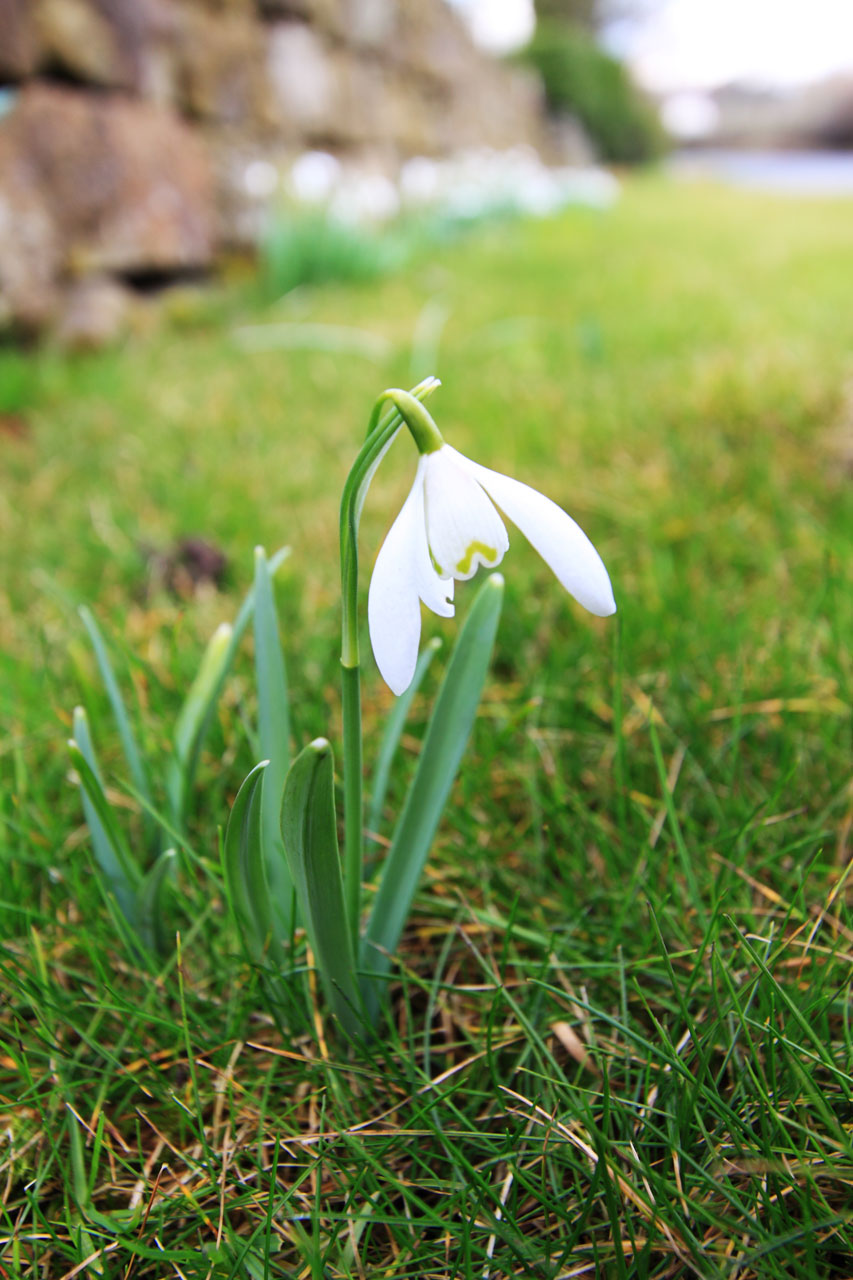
Snowdrop

Single snowdrop in spring.